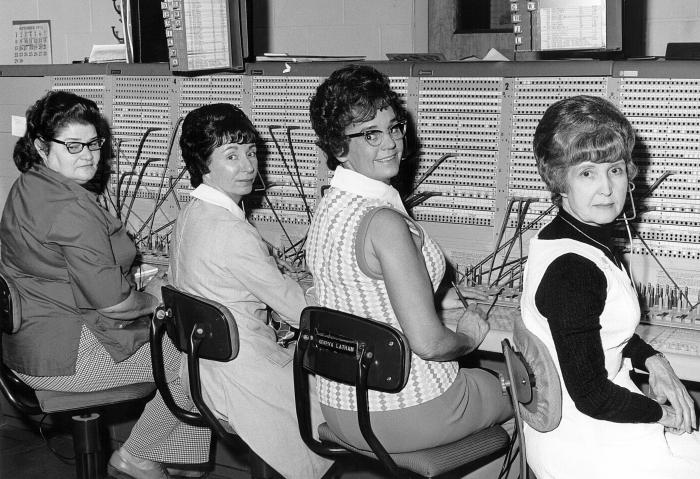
This historic 1974 photograph depicts a number of CDC telephone operators in front of a traditional switchboard.